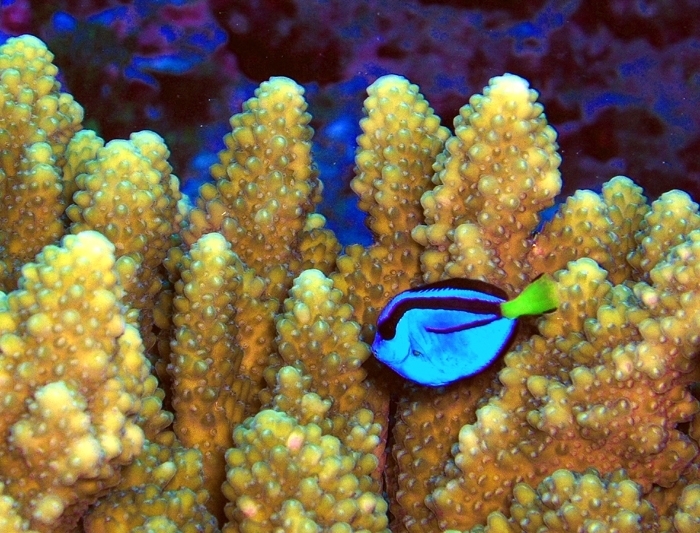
Pacific Remote Islands National Wildlife Refuge Complex

Paracanthurus Hepatus, a coral reef fish also known as a Pacific blue tang, contrasts sharply with the stony Acropora coral at one of the Pacific Remote Islands National Wildlife Refuge Complex.